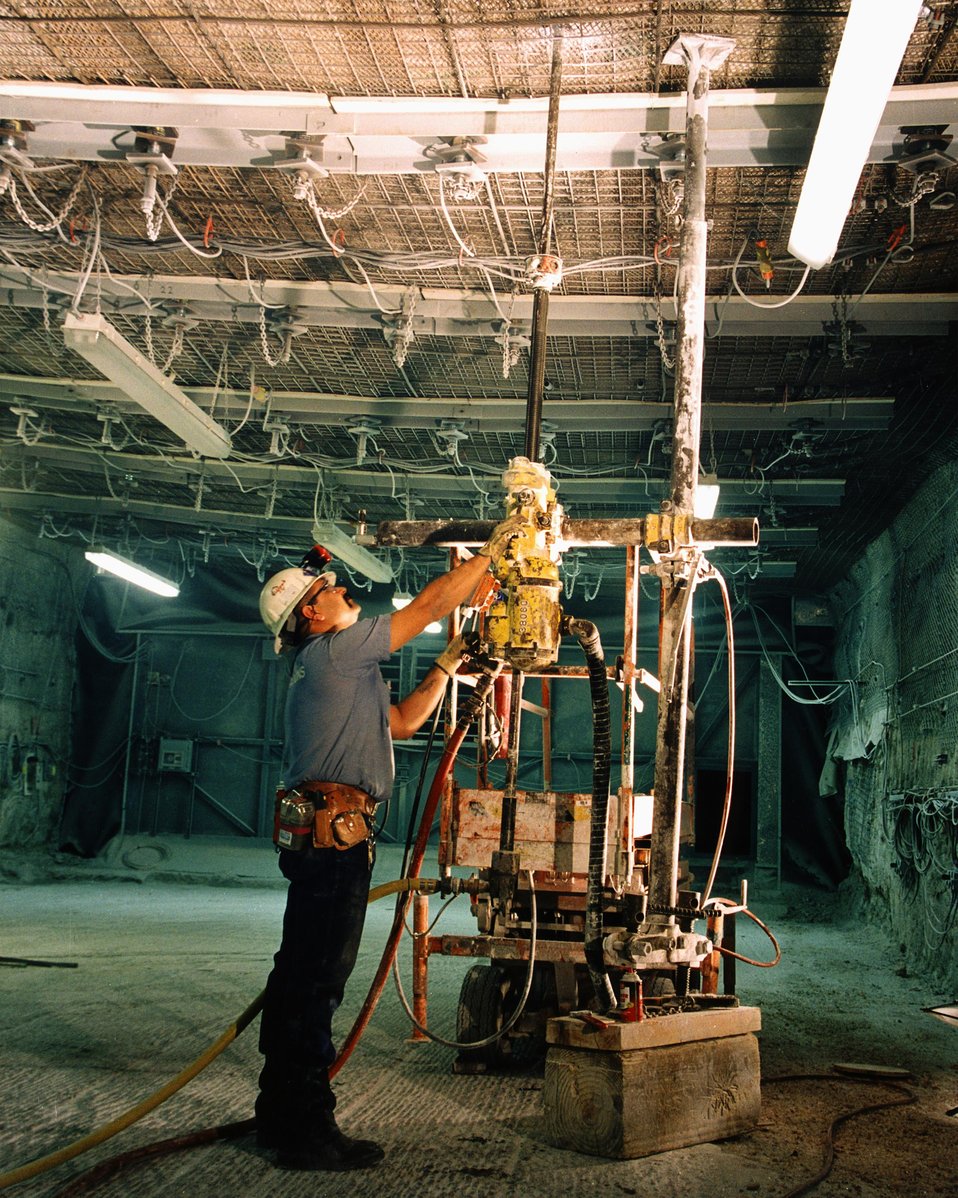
MINING TECHNICIAN INSTALLING A ROOF BOLT AT WIPP.

THE TECHNICIAN IS USING AN AIR ACTUATED DRILL TO INSTALL A ROOF BOLT IN THE WASTE ISOLATION PILOT PLANT ROOF SUPPORT SYSTEM, 2150 FEET UNDERGROUND. WIPP, LOCATED SOUTHEAST OF CARLSBAD, NEW MEXICO, IS A DOE RESEARCH AND DEVELOPMENT FACILITY DESIGNED TO DEMONSTRATE THE SAFE DISPOSAL OF TRANSURANIC RADIOACTIVE WASTES.